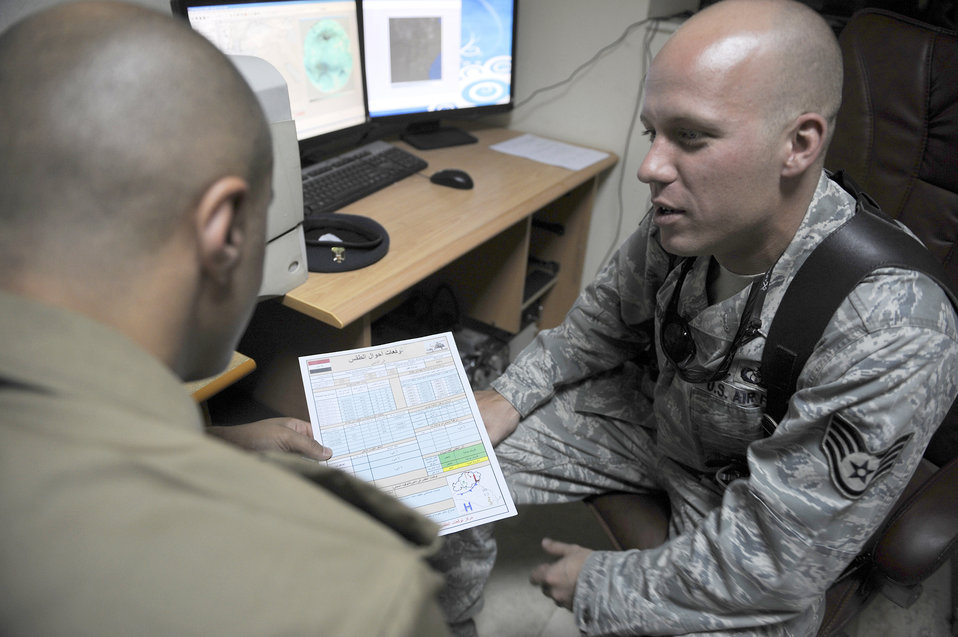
U.S. advisers help Iraqis kick off weather forecaster program

(Right) Staff Sgt. Dan Alexander reviews weather data with an Iraqi air force weather forecaster June 14, 2011, at the IqAF's weather center in Baghdad. Air Force weather advisers have been training the initial cadre of Iraqi air force weather forecasters over the past three years. Sergeant Alexander is a weather adviser assigned to the Iraq Training and Advisory Mission - Air.